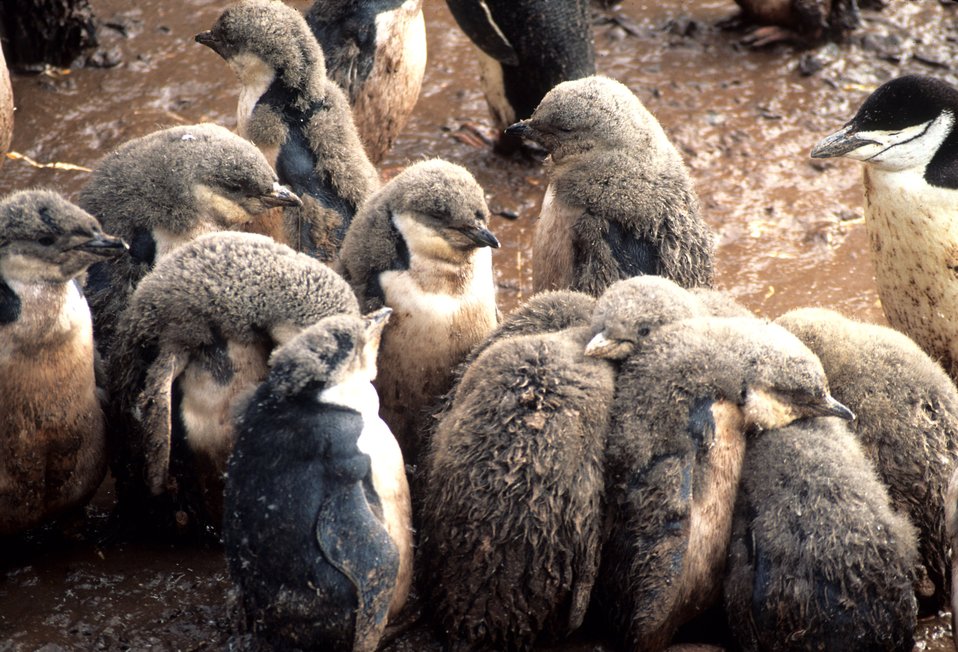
Molting chinstrap penguins, Seal Island.